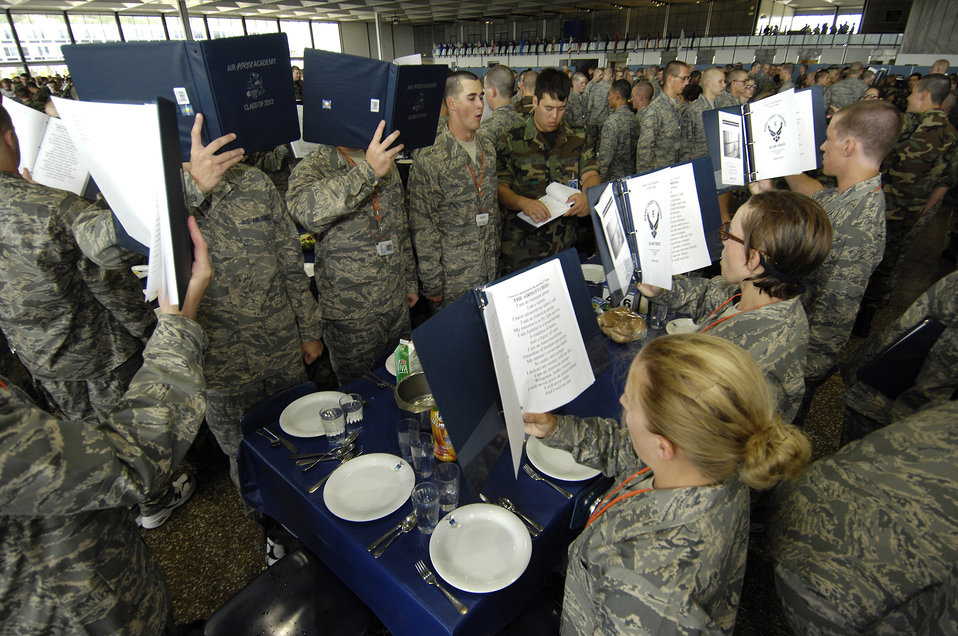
Class of 2012 Arrives

Members of the Class of 2012 recite the Airman's Creed during the lunch meal held in Mitchell Hall on Day Two of the 38 days of Basic Cadet Training June 27 at the U.S. Air Force Academy, Colo. Inprocesing marks the start of 38 days of Basic Cadet Training, which is designed to prepare basic cadet trainees for entry into the cadet wing.